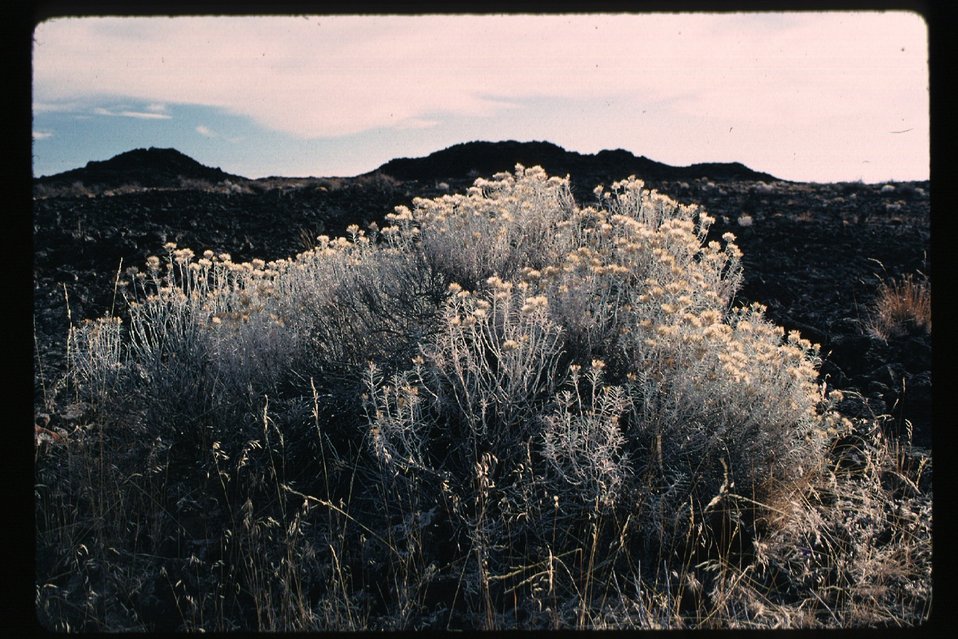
Crystal Ice Cave Scenic Great Rift Shoshone Field Office USRD Upper Snake River District